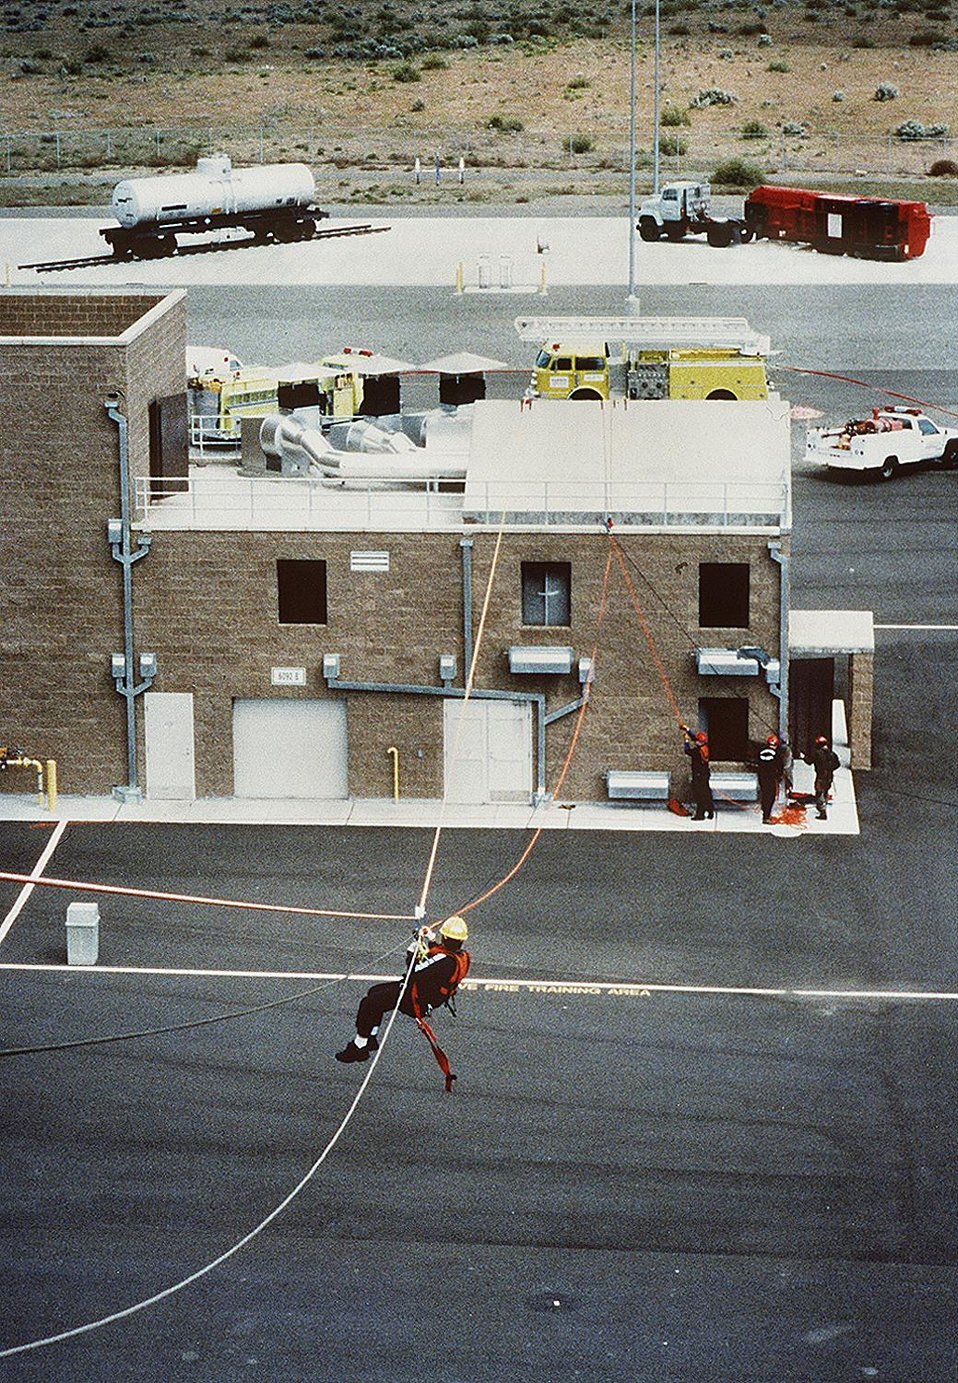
HANFORD FIREFIGHTERS PRACTICE HIGH-ANGLE RESCUES BETWEEN THE HAMMER SIX STORY TRAINING TOWER AND BURN BUILDING (SHOWN).

THE HAZARDOUS MATERIALS MANAGEMENT AND EMERGENCY RESPONSE CENTER (HAMMER), IS A TRAINING FACILITY LOCATED IN RICHLAND, WASHINGTON. HAMMER AREAS OF EXPERTISE INCLUDE EMERGENCY OPERATIONS, ENVIRONMENTAL AND WASTE MANAGEMENT AND RECOVERY, FIRE OPERATIONS, LAW ENFORCEMENT, NUCLEAR SAFETY, OCCUPATIONAL SAFETY AND HEALTH AND TRANSPORTATION. HAMMER PLAYS AN IMPORTANT ROLE IN HOMELAND SECURITY TRAINING.